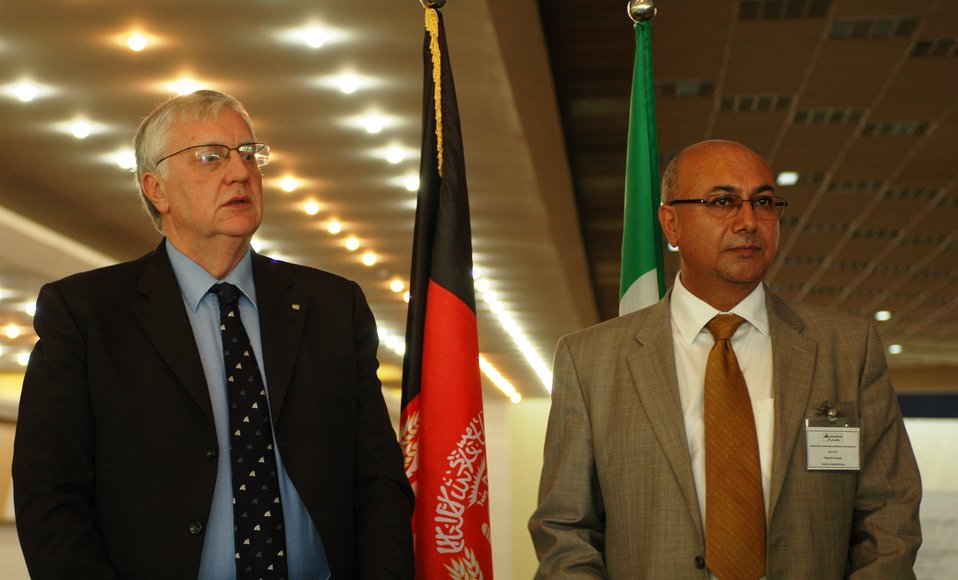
Afgan and Itailian Marble Mining Association Representatives